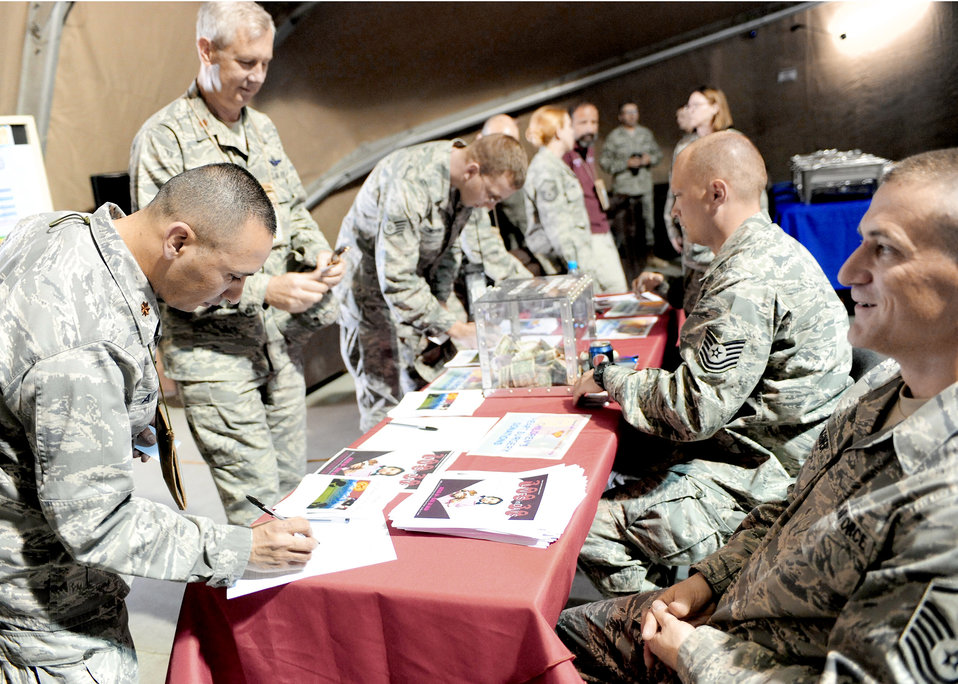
Airmen fill out pledge forms for the